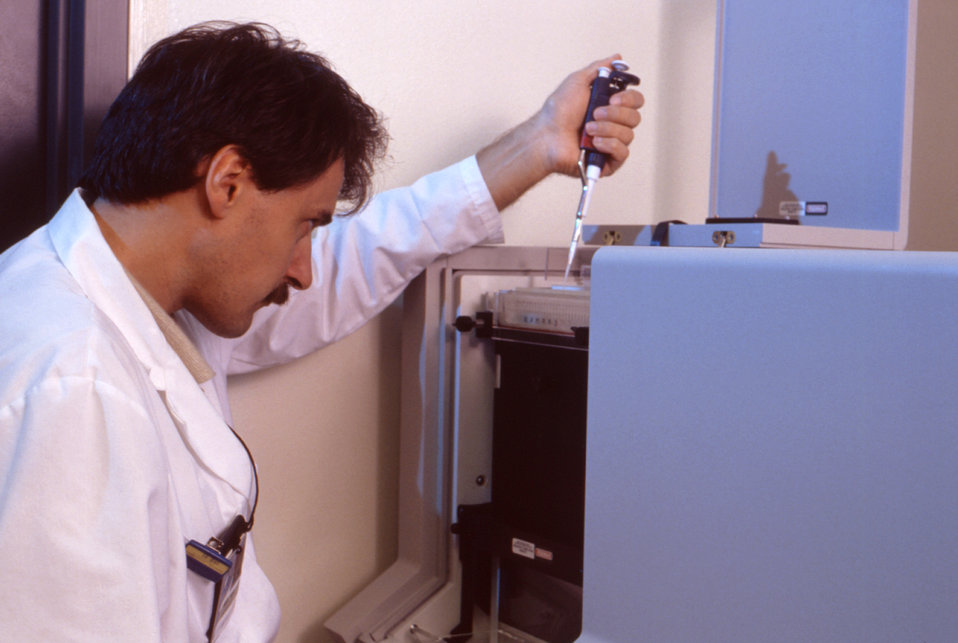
This CDC laboratorian is shown pipetting specimens as part of the process of conducting laboratory research.